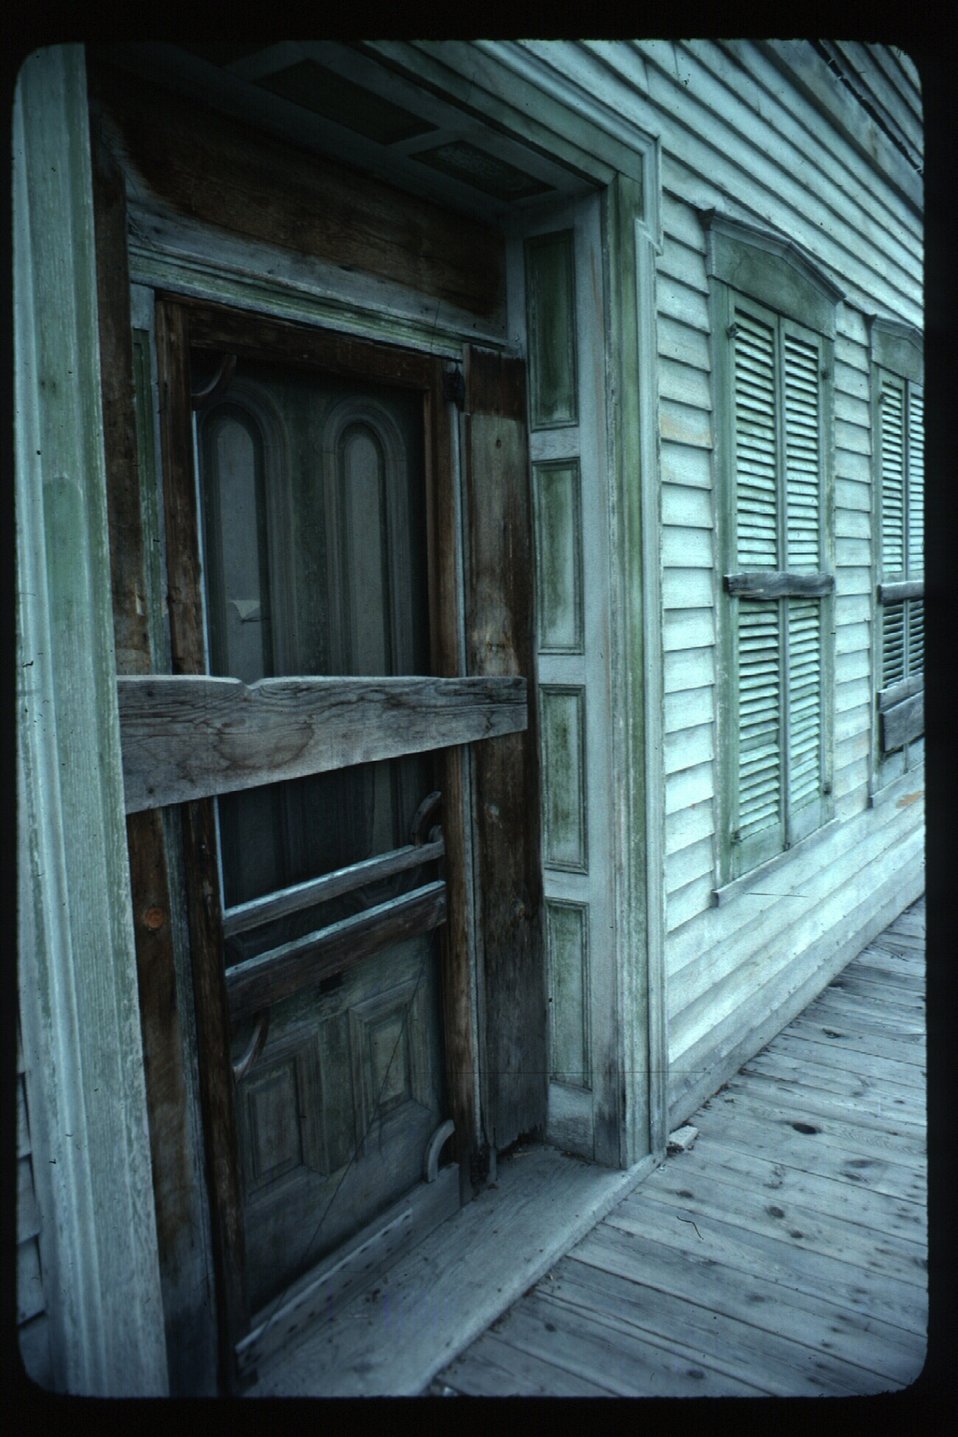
Silver City Archeology LSRD Lower Snake River District